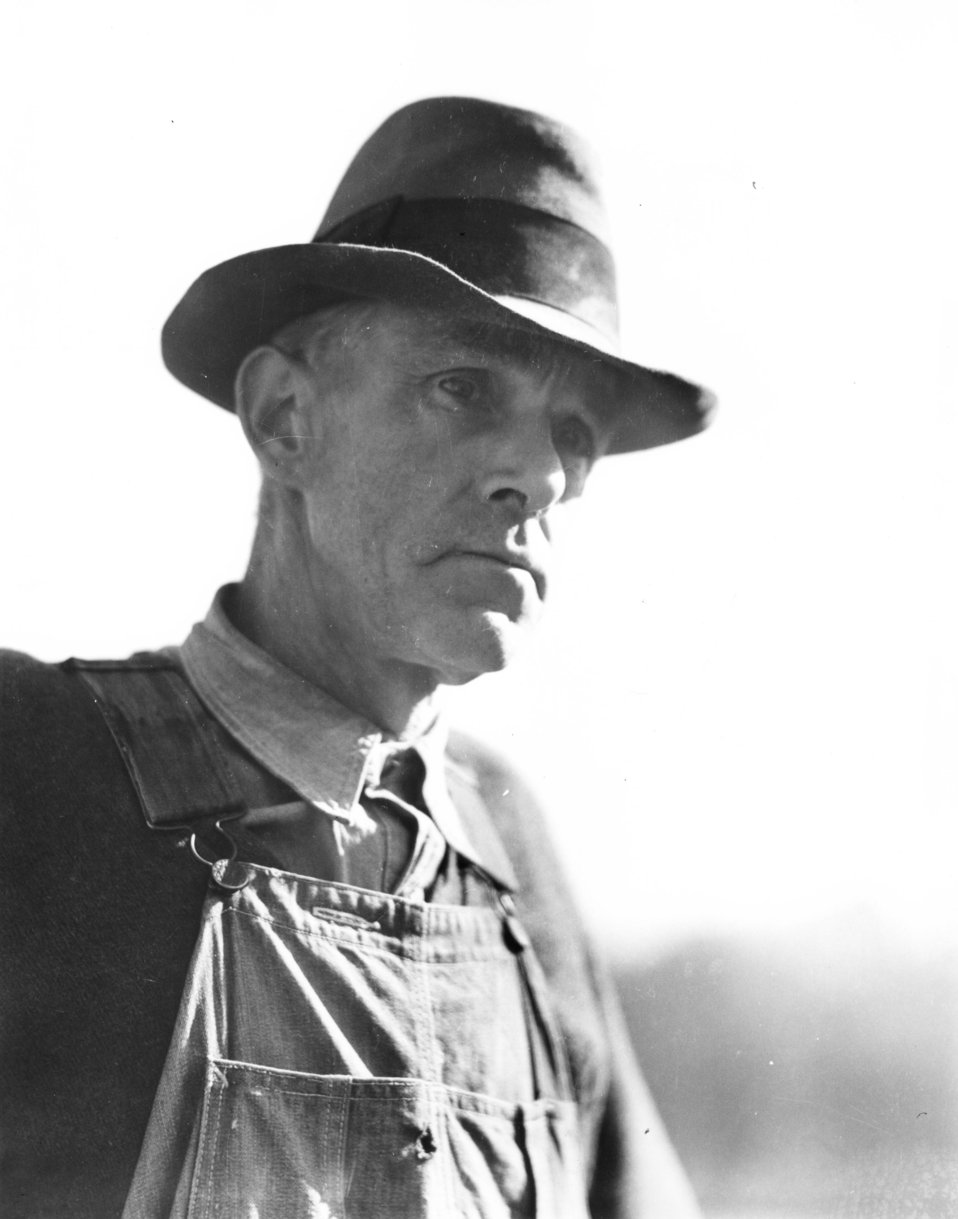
Early settlers at Oak Ridge